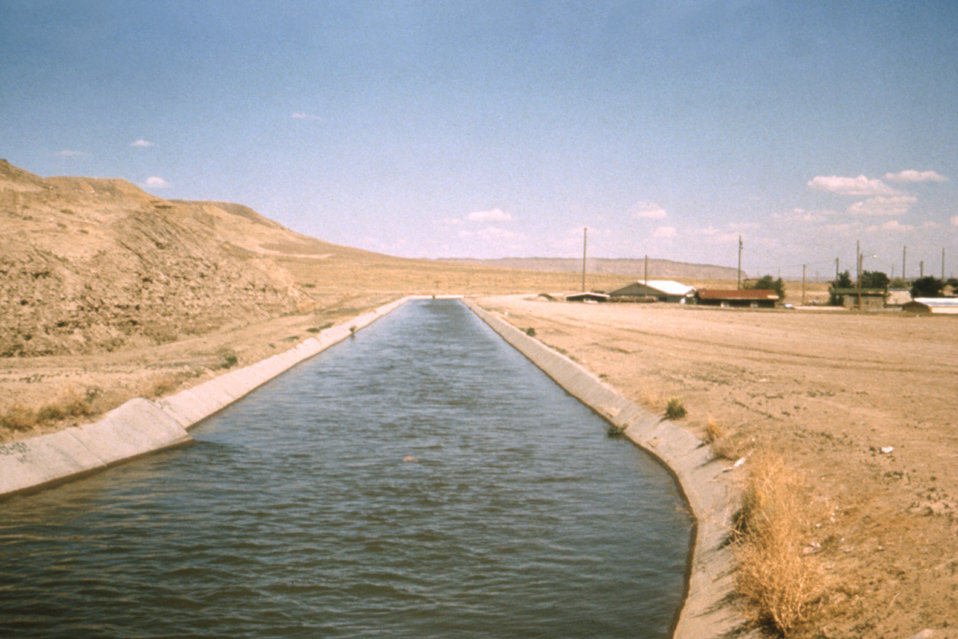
This is a 1976 photograph showing an irrigation distribution canal in New Mexico.